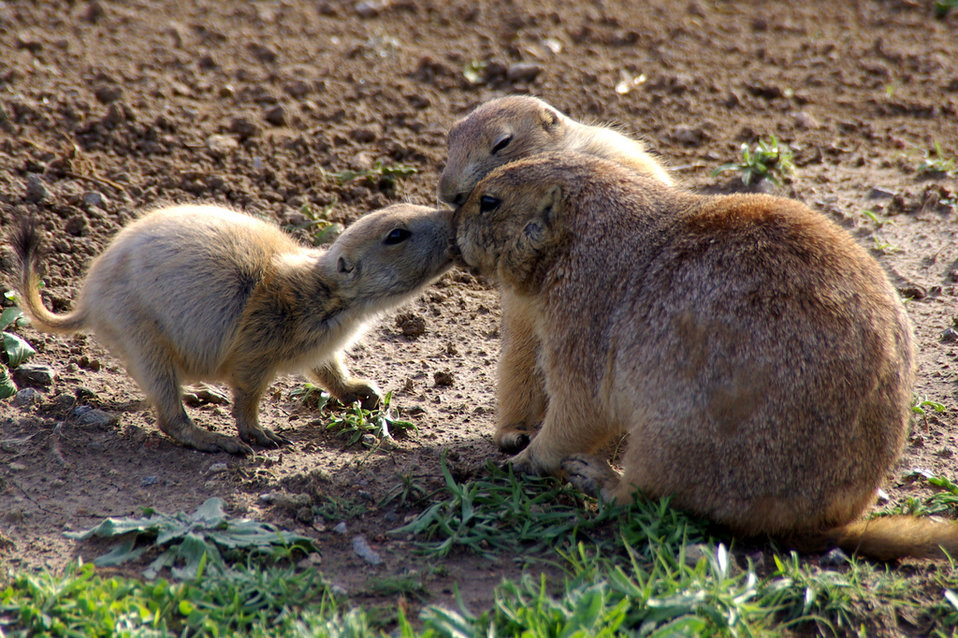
prairie dogs kiss

Prairie dogs often touch noses with family members as they come and go in the area around their burrow.
Wichita Mountains National Wildlife Refuge, OK